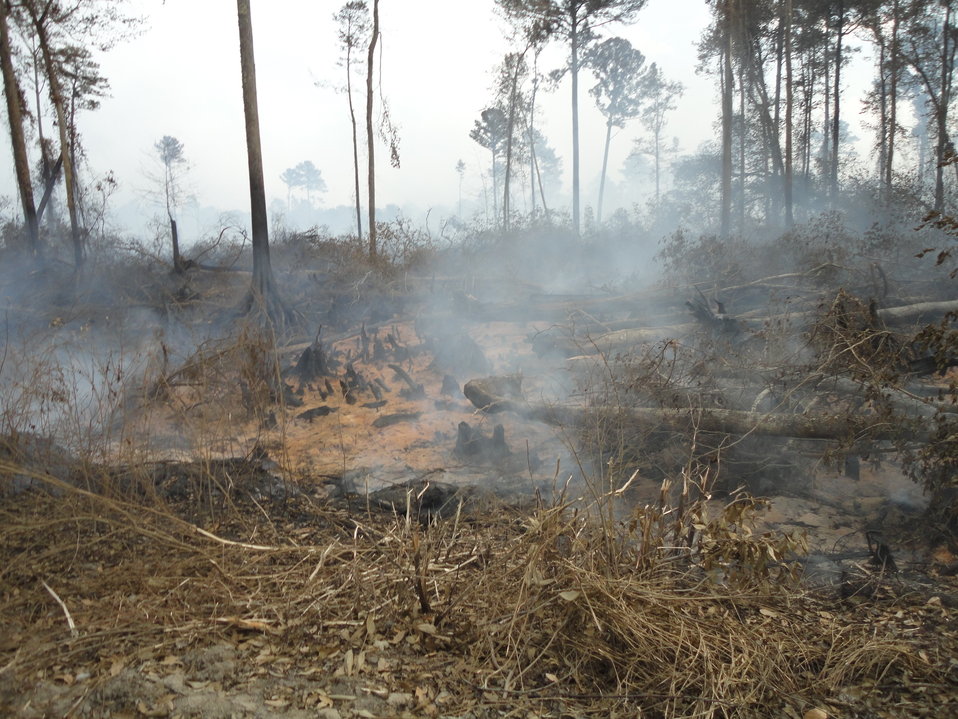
Smoldering peat fire

Suffolk, VA, Aug. 2011: Smoke rises from a fire burning deep in peat soils at the Lateral West Fire on Great Dismal Swamp National Wildlife Refuge.